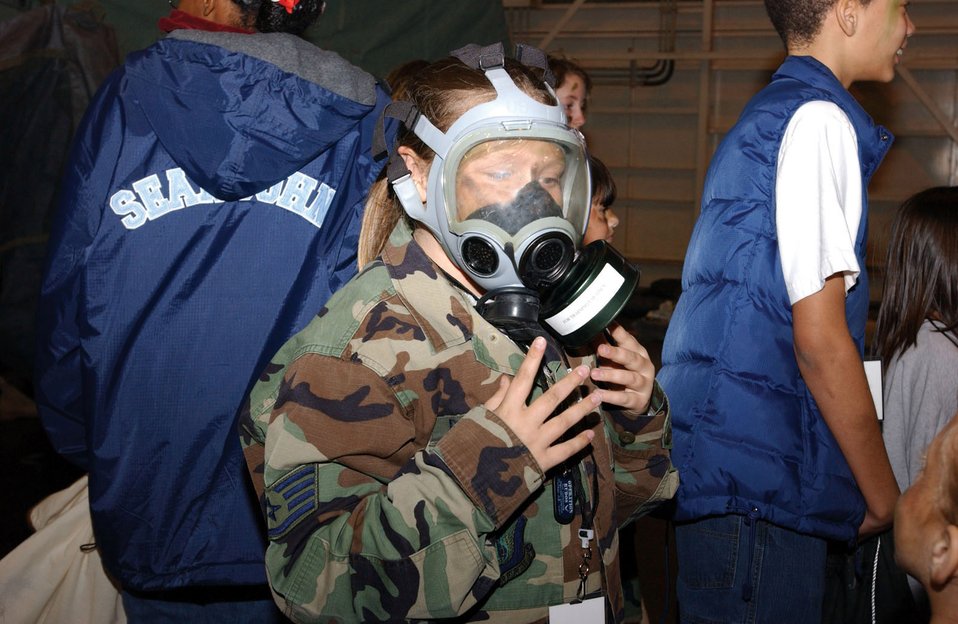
Kadena children get deployment experience

KADENA AIR BASE, Japan -- Logan Deremer, 10, tries on a gas mask to experience what her dad would go through if he had to use one while deployed. It was part of an Operation Kids Understanding Deployment Operations event March 12. Logan is the daughter of Staff Sgt. David Deremer of the 18th Communications Squadron.